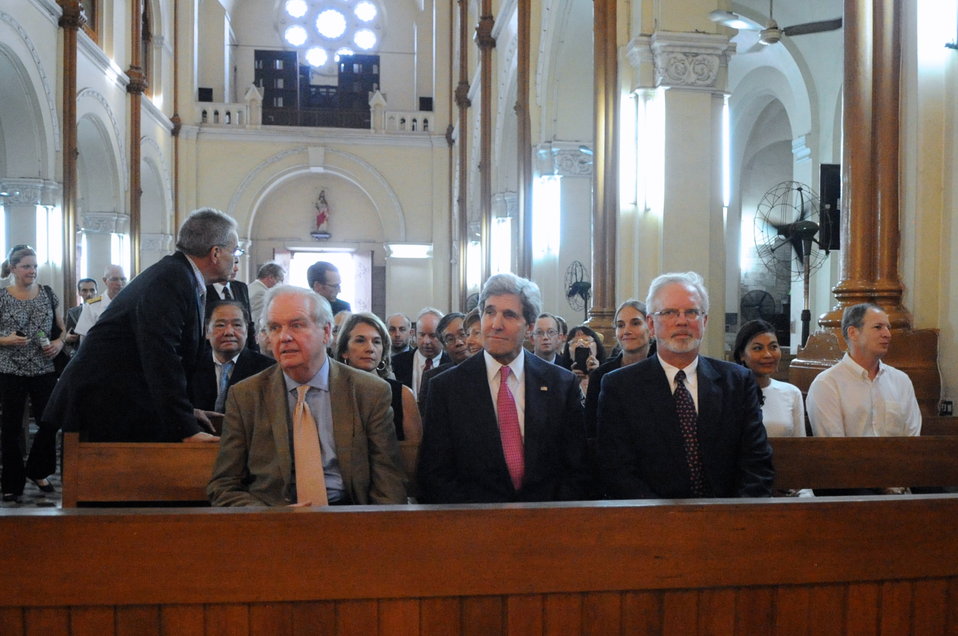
Secretary Kerry Attends Mass in Vietnam

U.S. Secretary of State John Kerry, flanked by Harvard University Vietnam program director Tom Vallely and U.S. Ambassador to Vietnam David Shear, attends Mass at Notre Dame Cathedral in Ho Chi Minh City on December 14, 2013.